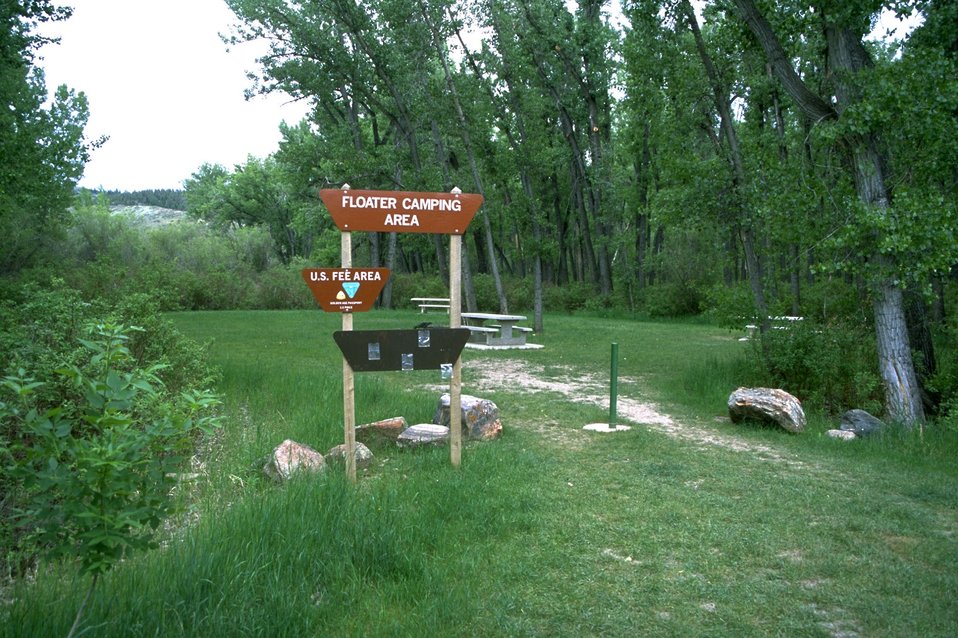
Floaters Camping sign and picnic tables near the Missouri River